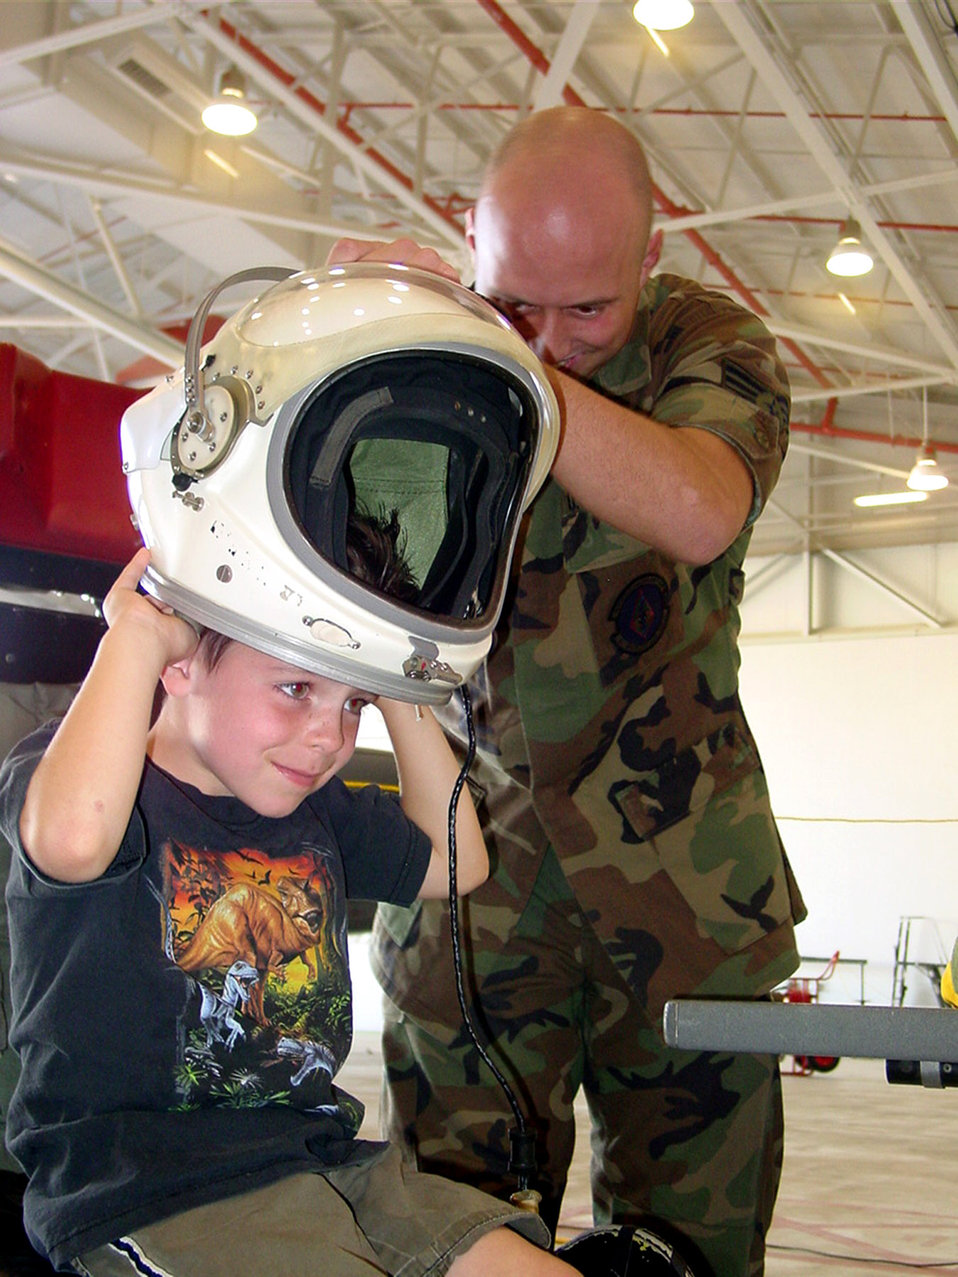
Open house

BEALE AIR FORCE BASE, Calif. -- Senior Airman Rocky Howell helps Duncan Ferguson put a helmet on at a full-pressure suit display during military family day here. Airman Howell is assigned to the 9th Physiological Support Squadron.